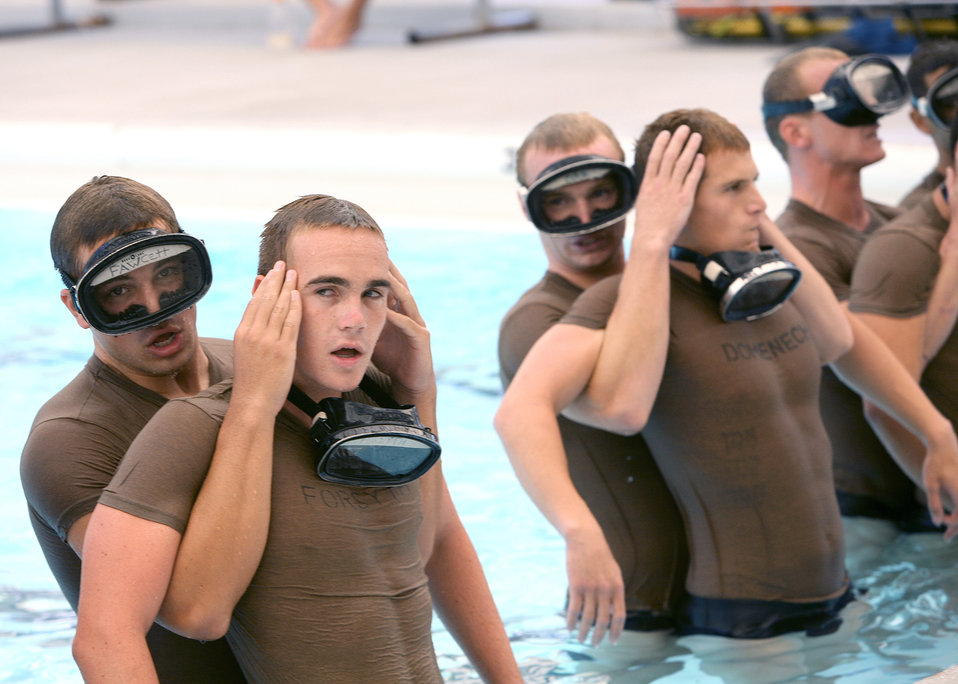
Recruiting service films Lackland training

Students recover after completing a 40-meter underwater swim in the pararescue indoctrination course June 18, 2008, at the Lackland Air Force Base Training Annex, Texas. The 10-week course trains future pararescuemen through intense physical and mental training. Air Force Recruiting Service officials returned to Lackland Air Force Base June 21 through 25 to film several technical school career fields for a new AirForce.com technical training video.